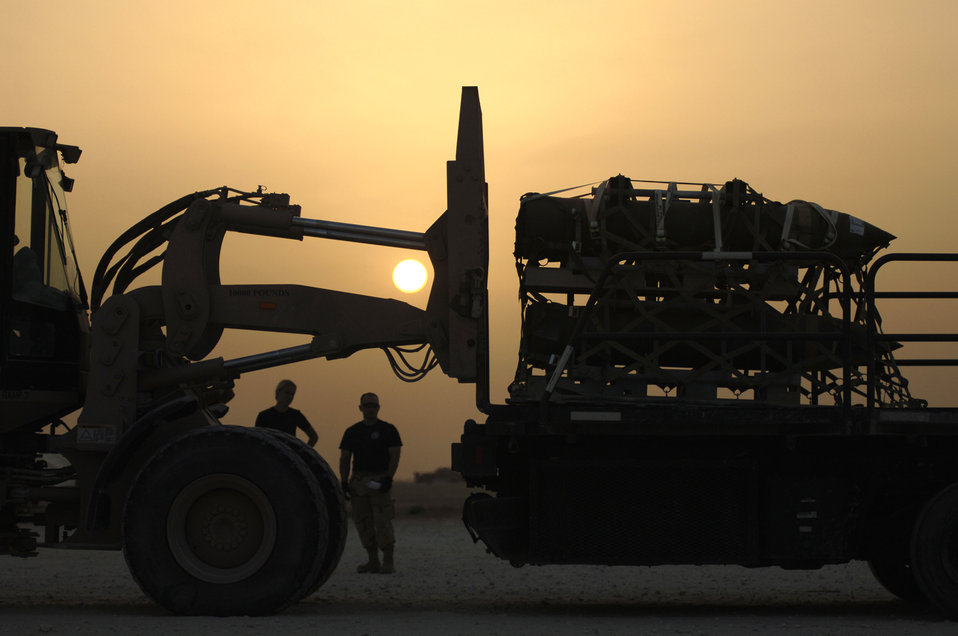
Aerial porters keep the Afghan missions moving

Aerial porters load pallets of bombs onto an aircraft loader in preparation for a night load. Approximately 2.1 million pounds of cargo are loaded per week in Southwest Asia. The aerial porter's current mission supports Operation Achilles, a campaign to create a secure environment and better quality of life for Afghan citizens. The Airmen are assigned to the 8th Expeditionary Air Mobility Squadron.